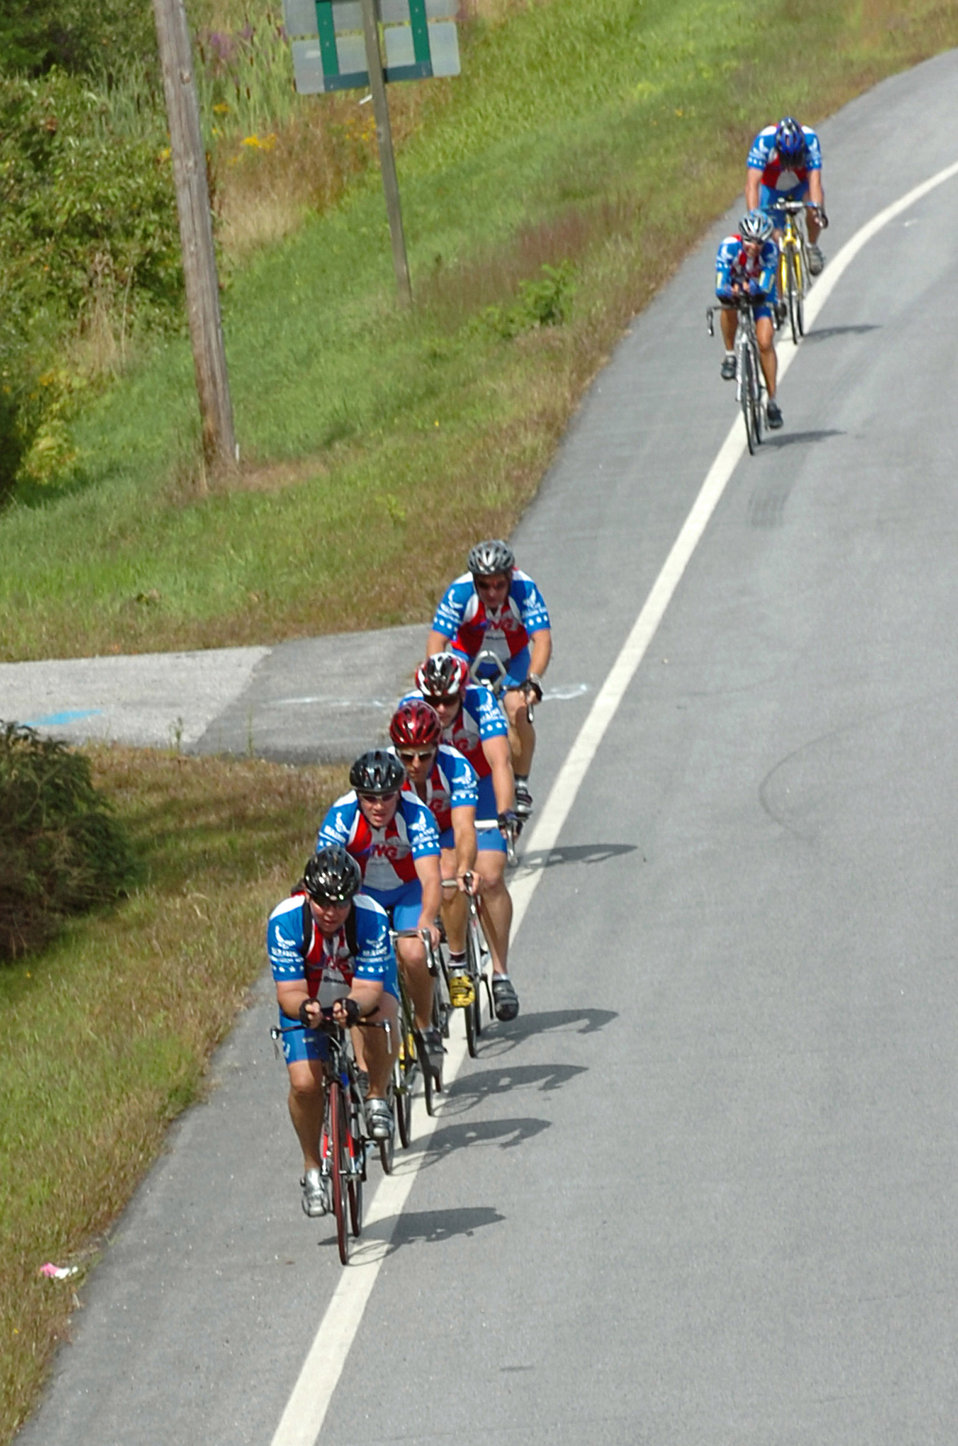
Maine Air Guard peddles Air Force Week from town to town

Members of the Maine Air National Guard Cycle Team ride along U.S. Route 1 outside Freeport, Maine, during the final leg of their 170-mile, three-day bicycle trek from Bangor to Portland. Eighteen Air Guard members rode to promote Air Force Week New England that takes place Aug. 17 to 26. Team members had opportunities to speak with people along the route about the Air Guard during their trek.